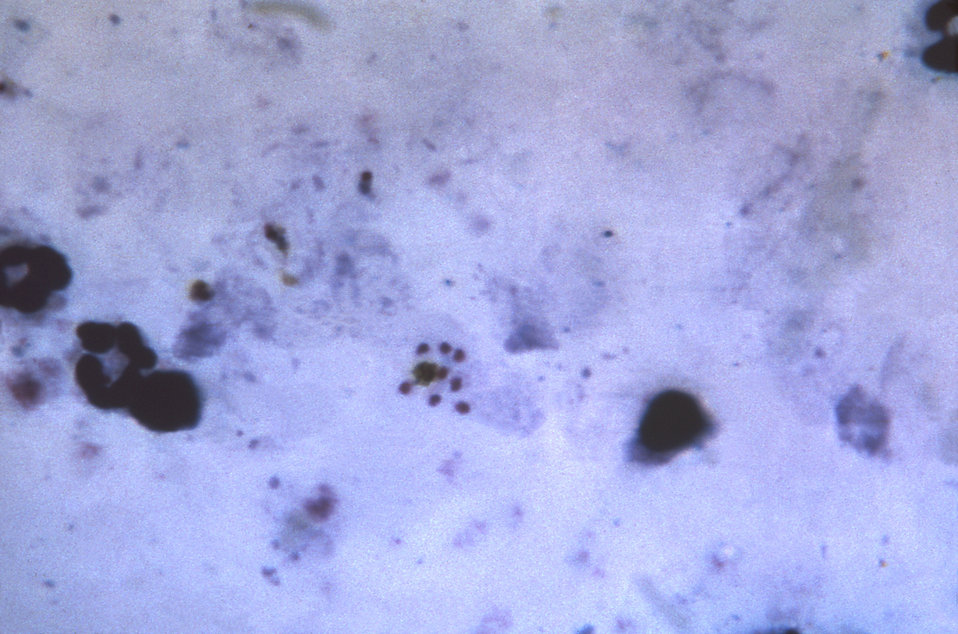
This thick film specimen reveals a mature schizont, 8 P. malariae merozoites, and a pigment clump.